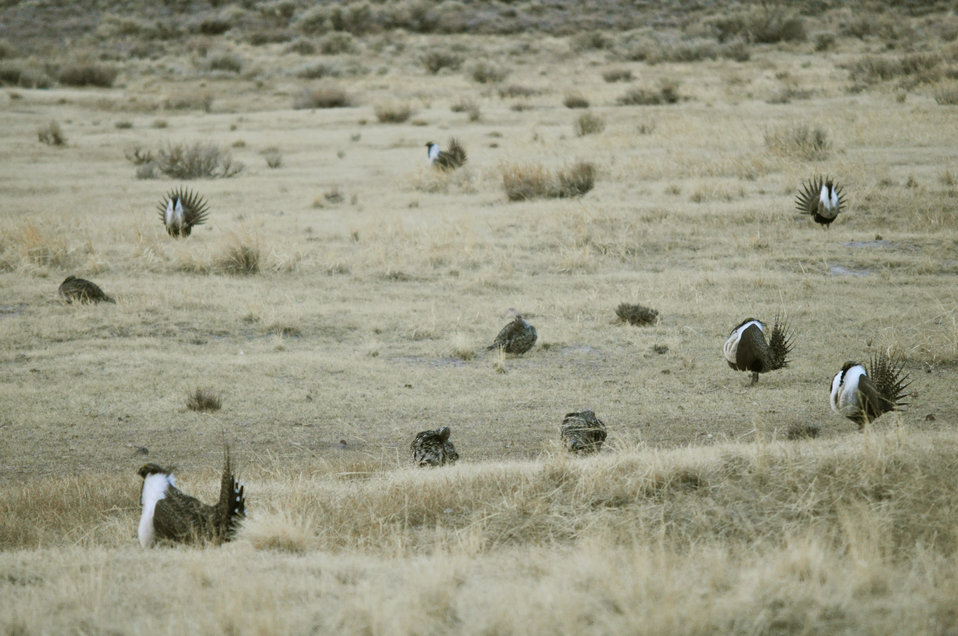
Greater Sage-Grouse at Lek

Greater sage-grouse lek near Bodie, California.